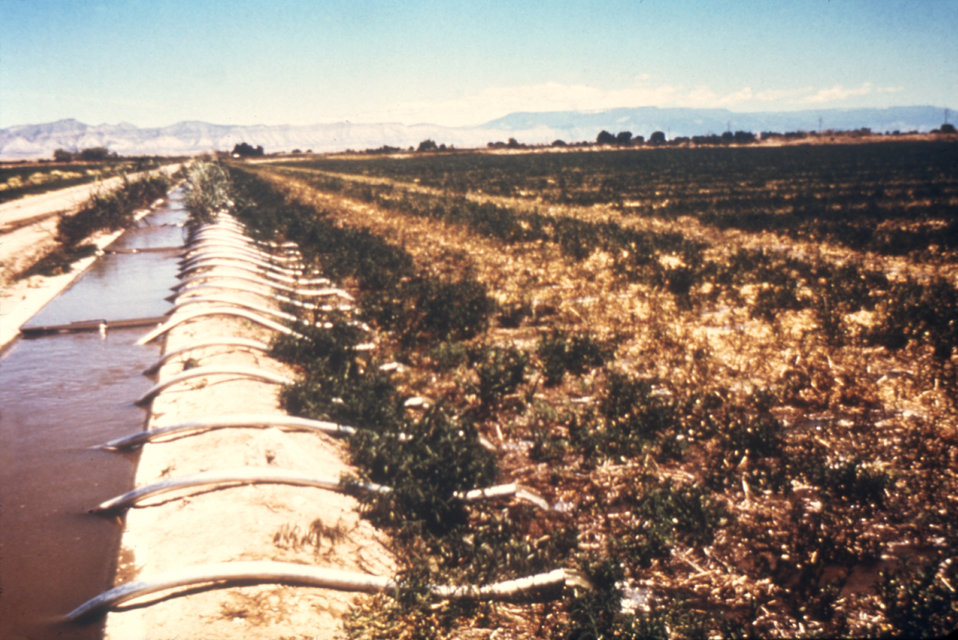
This image depicts a 'lateral irrigation' system where water is conveyed off the main channel to laterally directed channels.